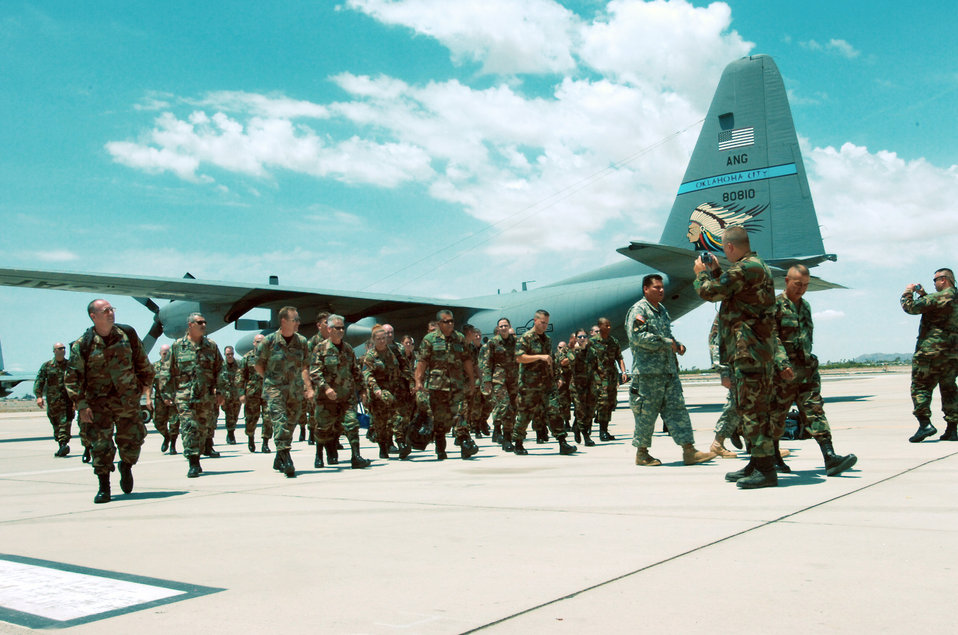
Operation Jump Start

Airmen from the Kansas Air National Guard's 94th Air Refueling Wing exit a C-130 Hercules at Marine Corps Air Station Yuma, Ariz., on Saturday, July 29. Airmen are deployed in support for annual training by guardsmen who are working with U.S. Customs and Border Protection.